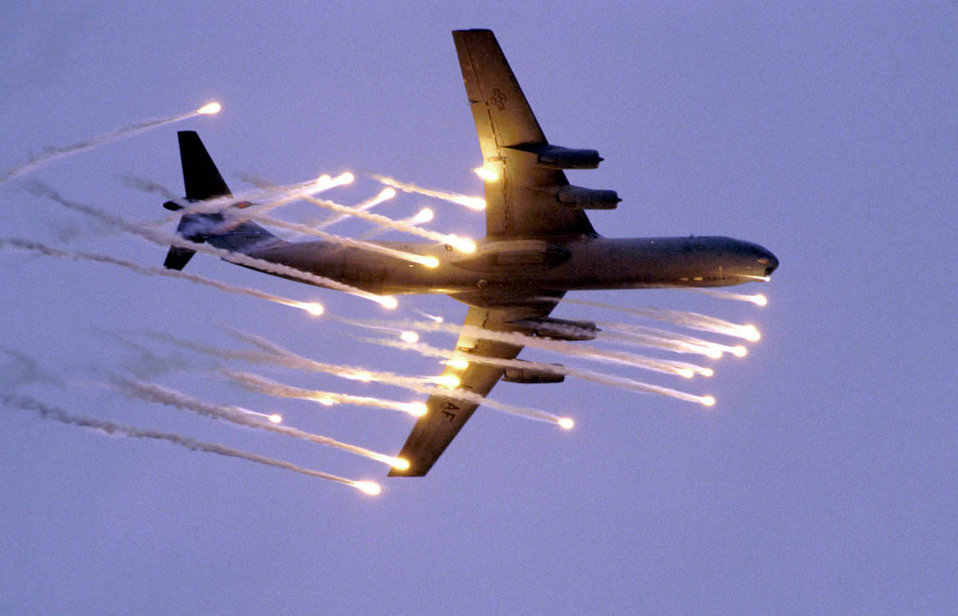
Danger Zone

FILE PHOTO -- A C-141B Starlifter from McGuire Air Force Base, N.J., launches flares on its final pass over the